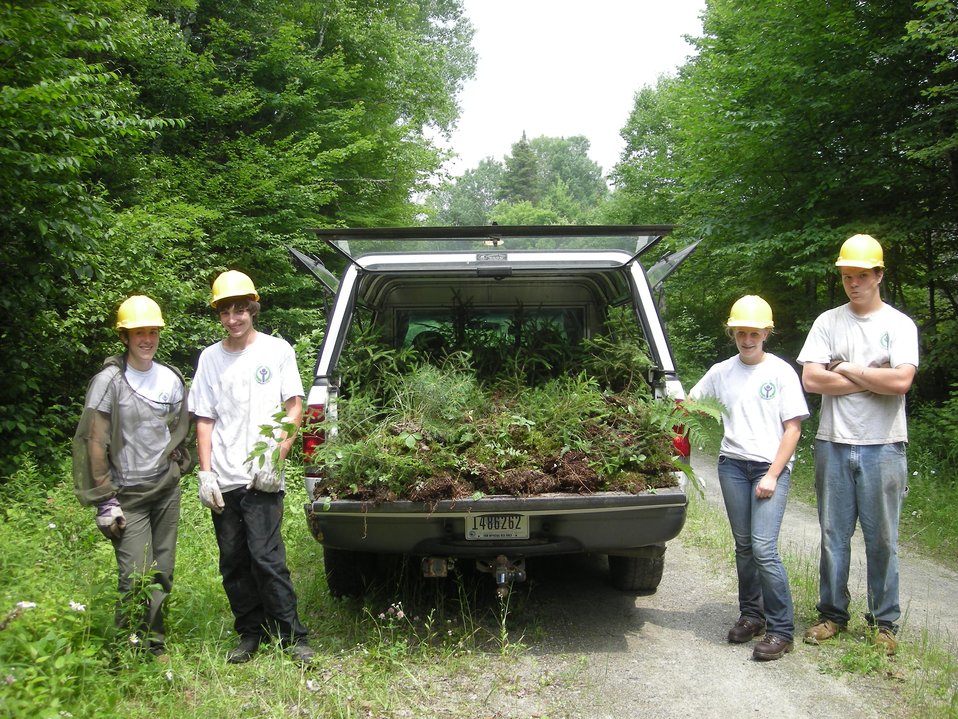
Harvesting spruce seedlings

The YCC crew is about to harvest spruce seedlings at the Nulhegan Basin Division of the Silvio O. Conte National Fish and Wildlife Refuge.